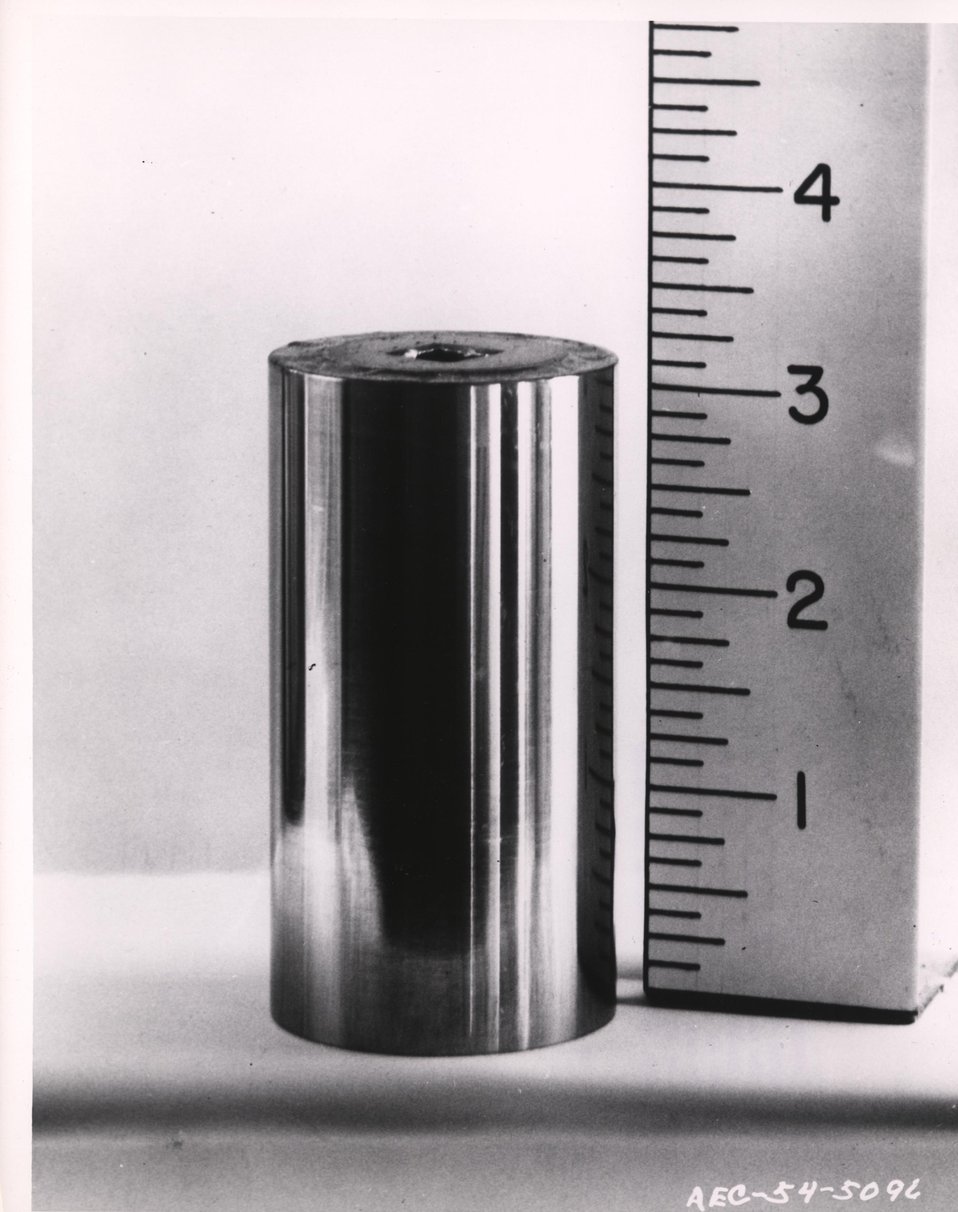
New cesium-137 radiation source as it appears in its final state. c. 1954